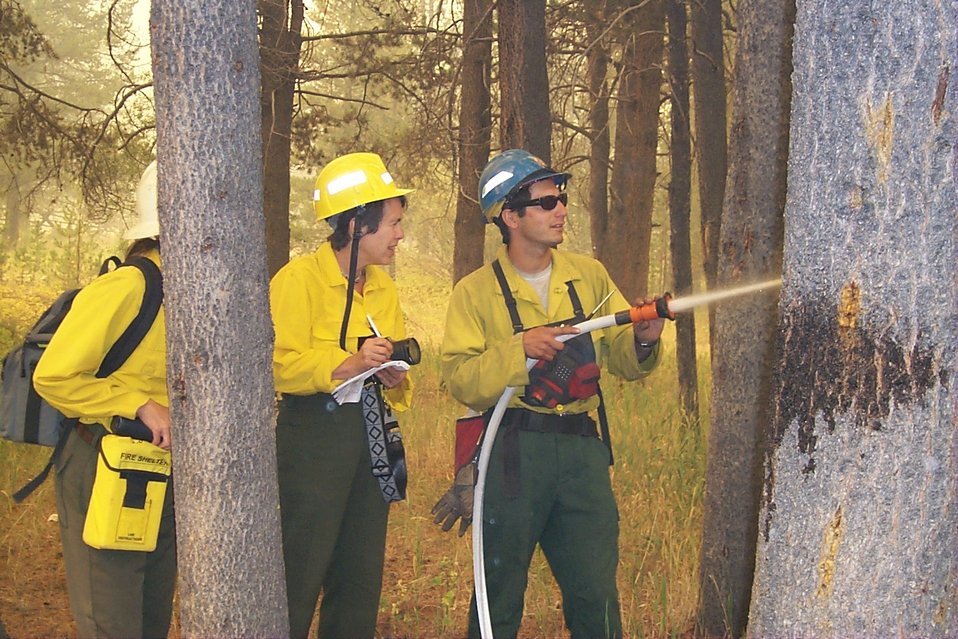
Fire retardant measures Fire Clearwater Fire Salmon Field Office USRD Upper Snake River District